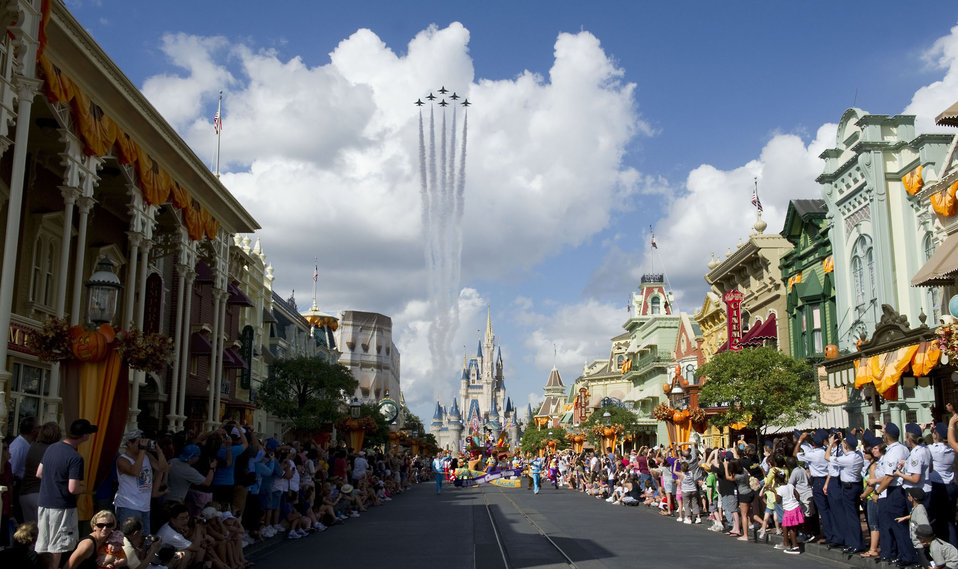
Thunderbirds over Fantasyland

The Thunderbirds, the U.S. Air Force air demonstration team, fly the delta formation over Cinderella’s Castle Oct. 26, 2010, at Disney World in Orlando, Fla. The theme park dedicated an entire day of events to Air Force servicemembers and their families during Air Force Week Cocoa Beach.